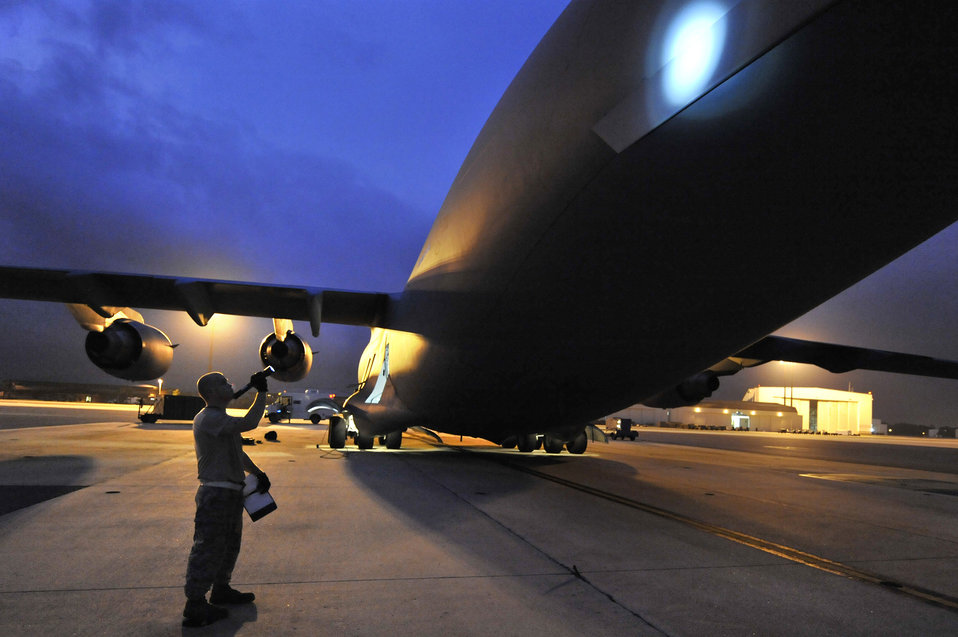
Night Inspection

Senior Airman Kyle Robinson uses a flashlight to inspect the exterior of a C-17 Globemaster III for missing screws or damage. Airman Robinson is a crew chief with the 315th Aircraft Maintenance Squadron at Charleston Air Force Base, S.C.